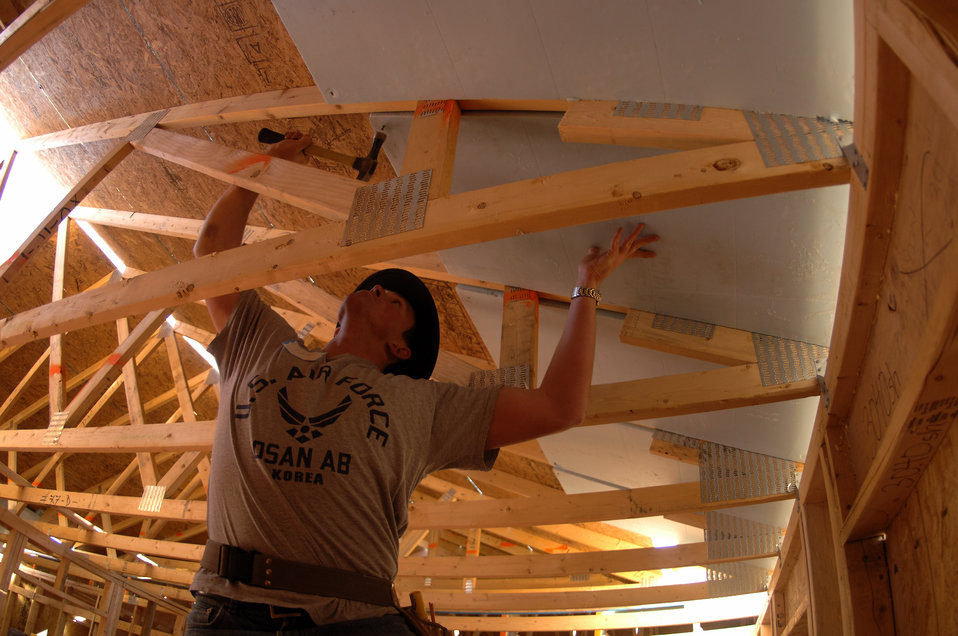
Cadets give up spring break to build homes

Cadet 3rd Class Matt Guertin holds insulation steady while nailing it in place. Cadet Guertin is one of 65 Air Force Academy cadets giving up their spring break this week, to build homes for the needy in Santa Fe, N.M.; Cody, Wyoming; El Paso, Texas; and Beaumont, Texas.